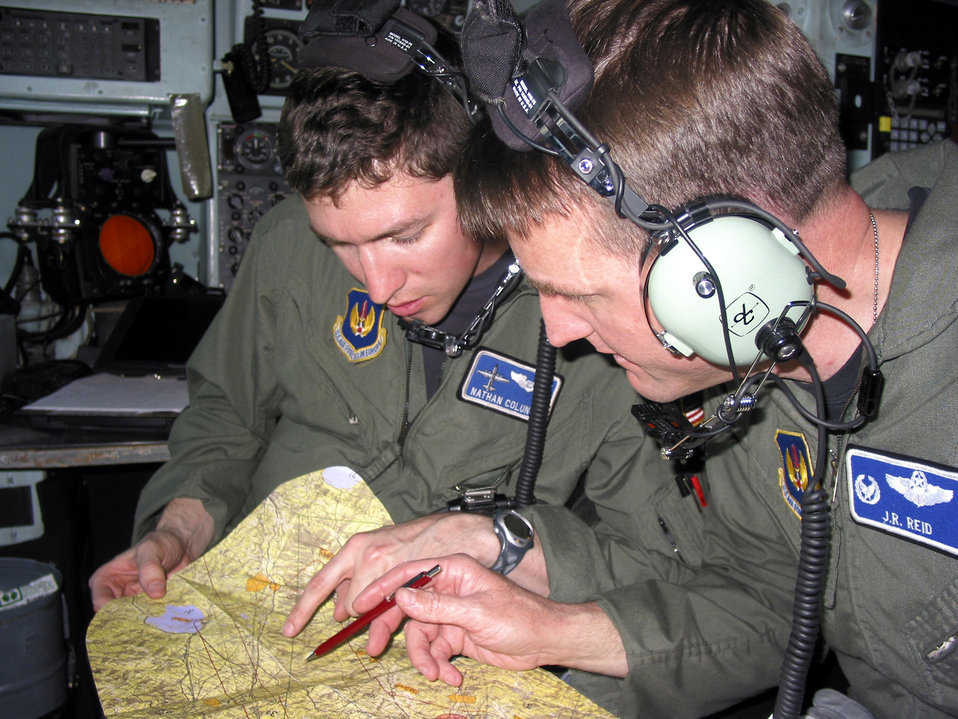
Airmen train in Italy

PISA, Italy -- First Lt. Nathan Colunga (left) reviews a map showing a planned flight route with Lt. Col. John Reid in the cockpit of a C-130 Hercules during Exercise Leaning Tower here April 2. The weeklong training mission included low-level flights and air drops using night-vision goggles. Liutenant Colunga is assigned to the 37th Airlift Squadron and Colonel Reid is the 37th AS commander from Ramstein Air Base, Germany.